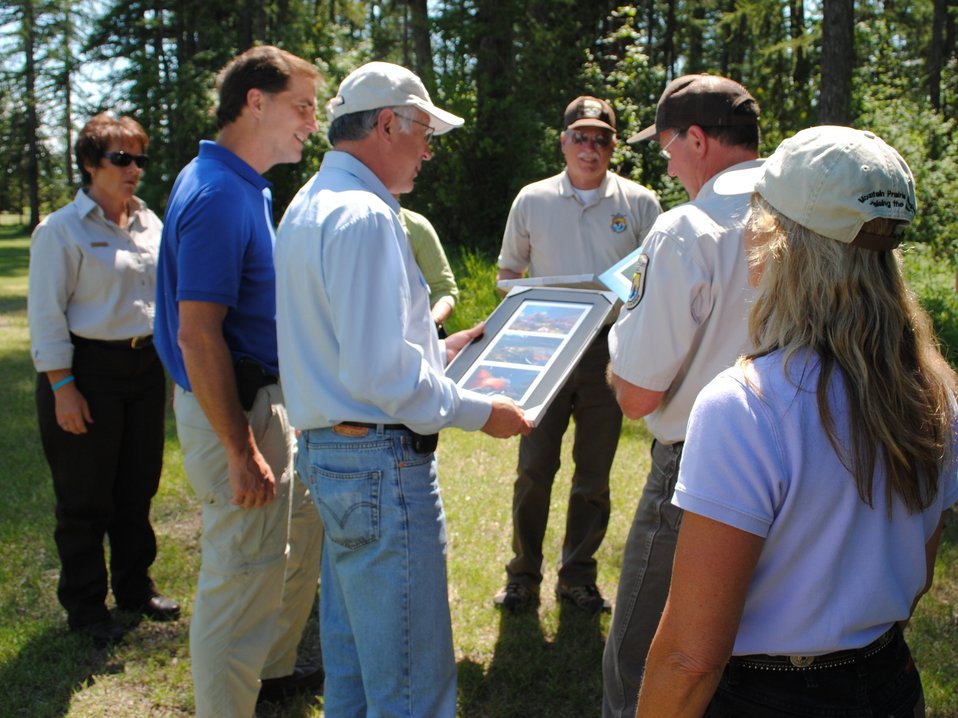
Creston NFH Staff Greet Secretary Salazar and Director Ashe With Gift

Secretary Ken Salazar holds framed photos of threatened bull trout, while Director Dan Ashe looks on, on a visit to Creston National Fish Hatchery in Montana.